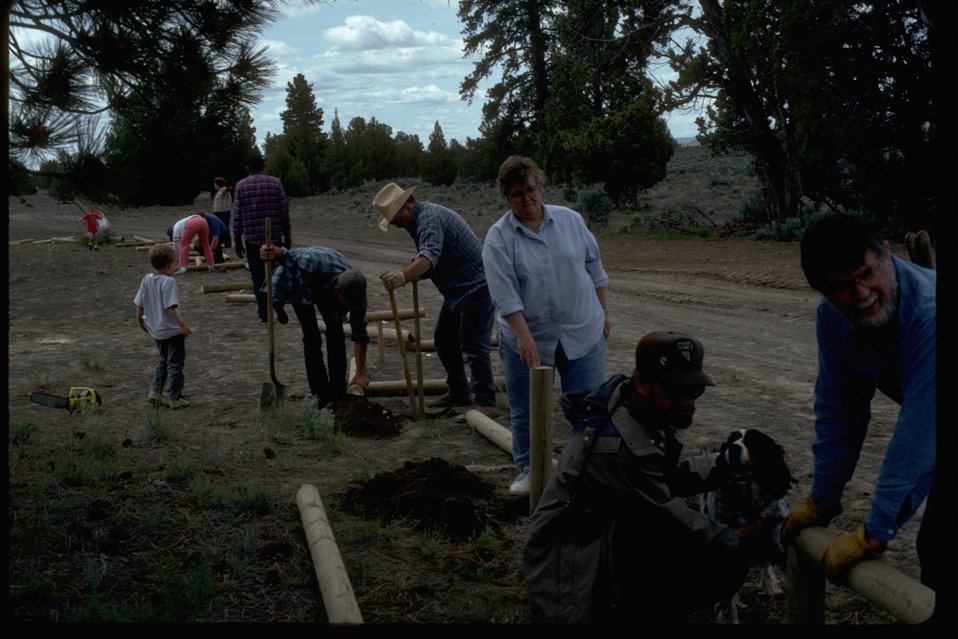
A volunteer project at Lost Forest.